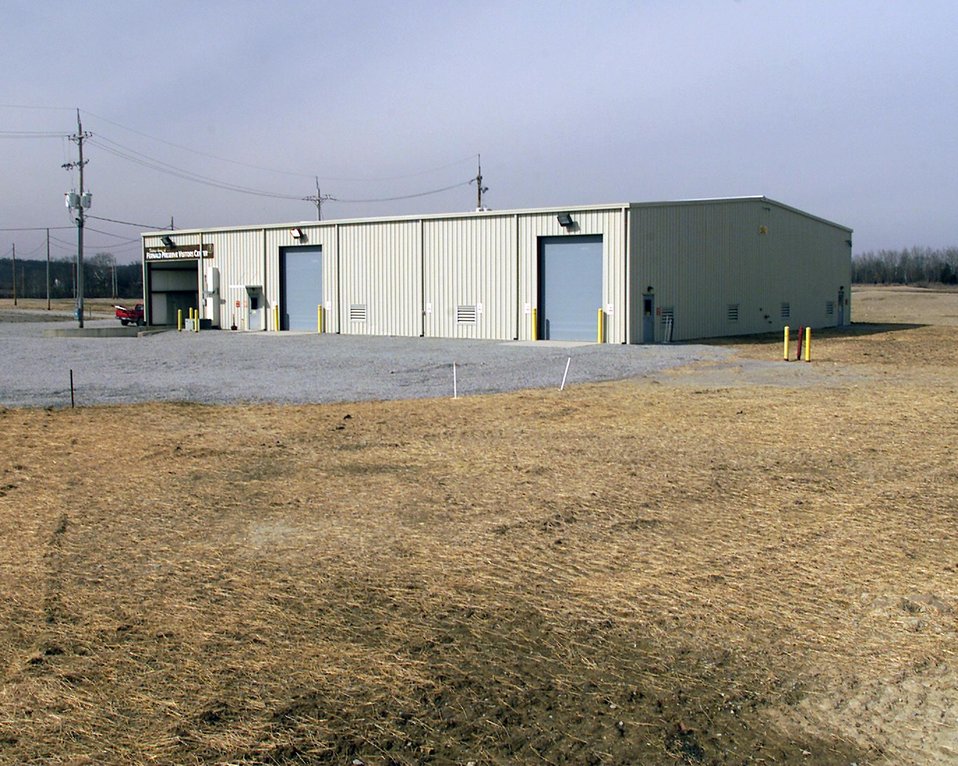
Southeast corner of a warehouse that was built to support site remediation activities and was eventually transformed into the Fernald Preserve Visitor Center.

The warehouse was one of only two major structures left after cleanup. More than 400 buildings once sprawled across the 1,050- acre site.